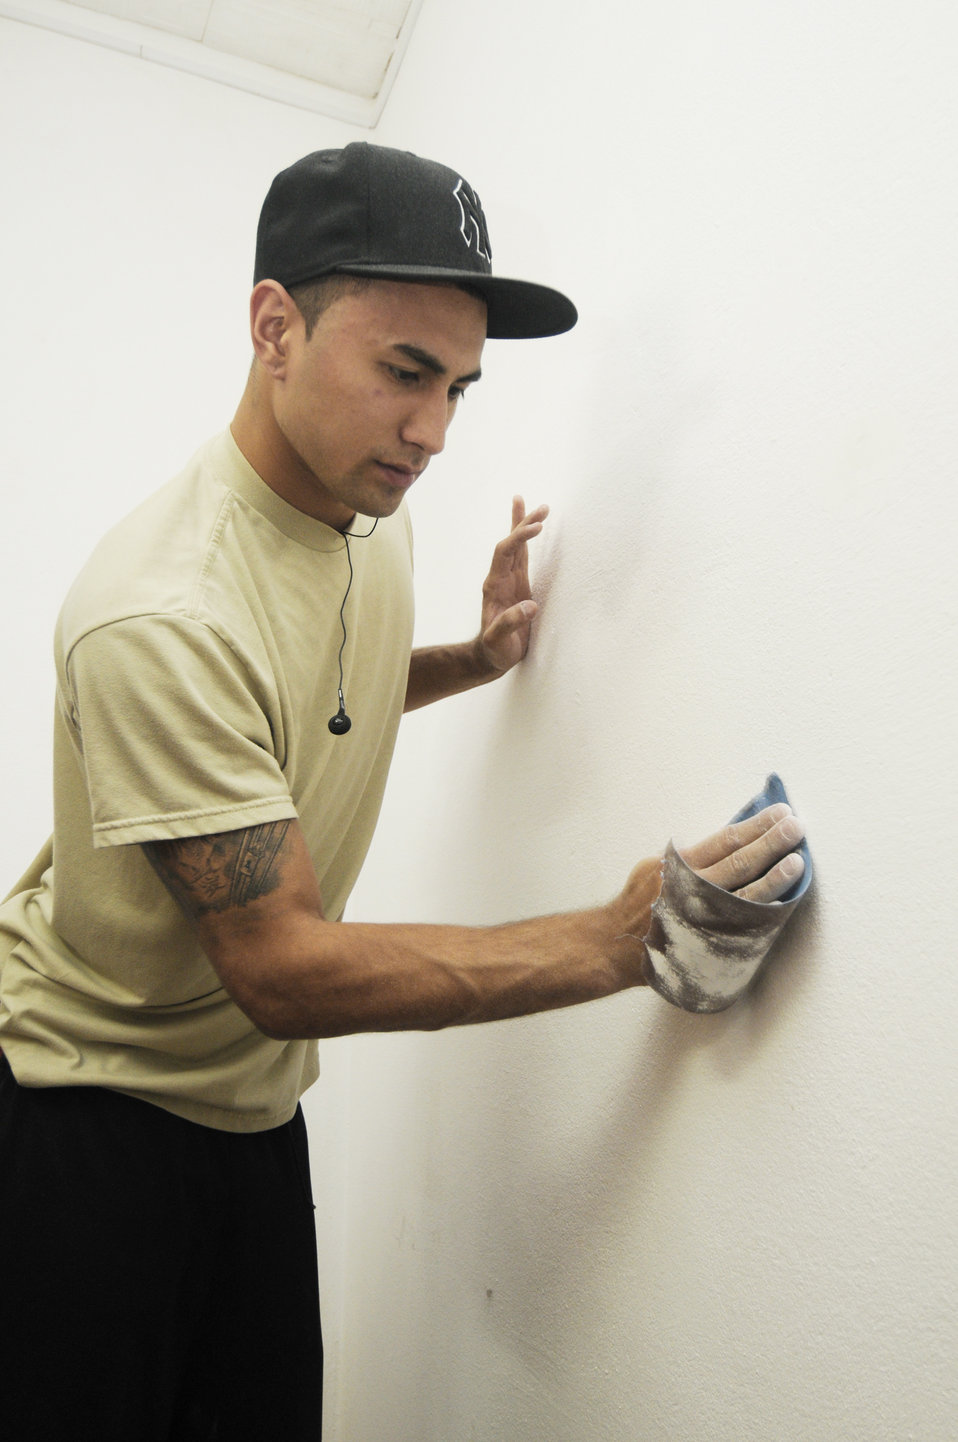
Spangdahlem Airmen reach out to Romanian community

Airman 1st Class Ryan Wietzema prepares the wall of a children's community center for repainting while deployed in support of Operation Dacian Thunder 2009 Oct. 26, 2009, in Turda, Romania. Members of Spangdahlem Air Base, Germany donated money and time to help refurbish the center during their deployment. The center provides academic help to about 50 local children after school to ensure they graduate. Airman Wietzema is assigned to the 52nd Security Forces Squadron.